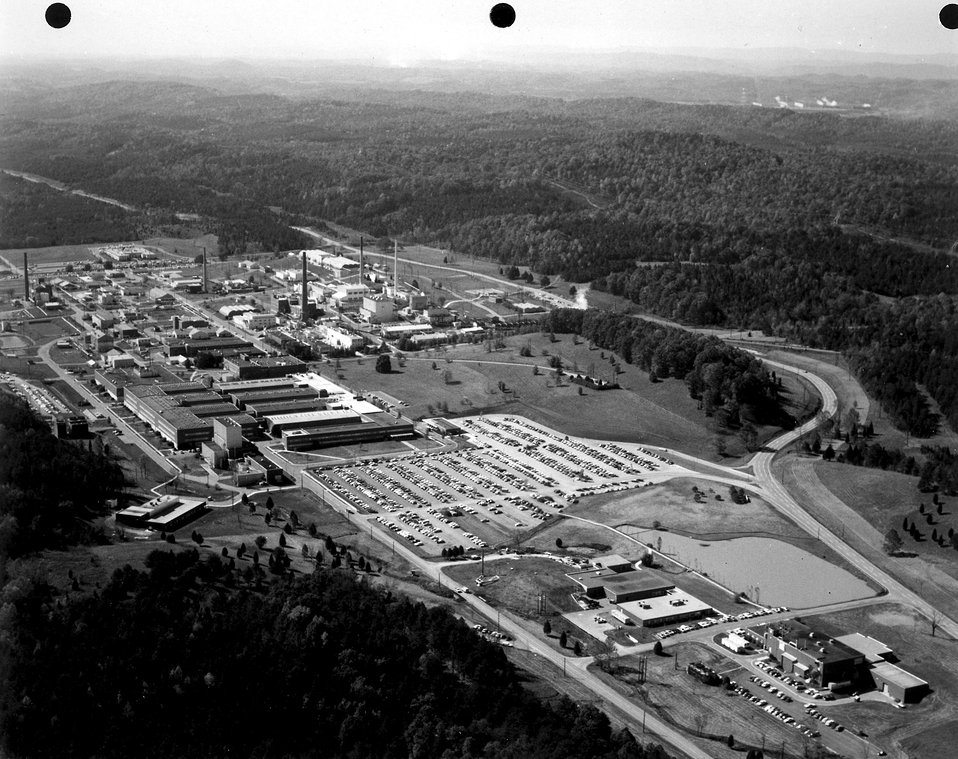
An aerial view of Oak Ridge National Laboratory, Oak Ridge, Tennessee, one of the Atomic Energy Commission's largest research and development installations. c. 1972